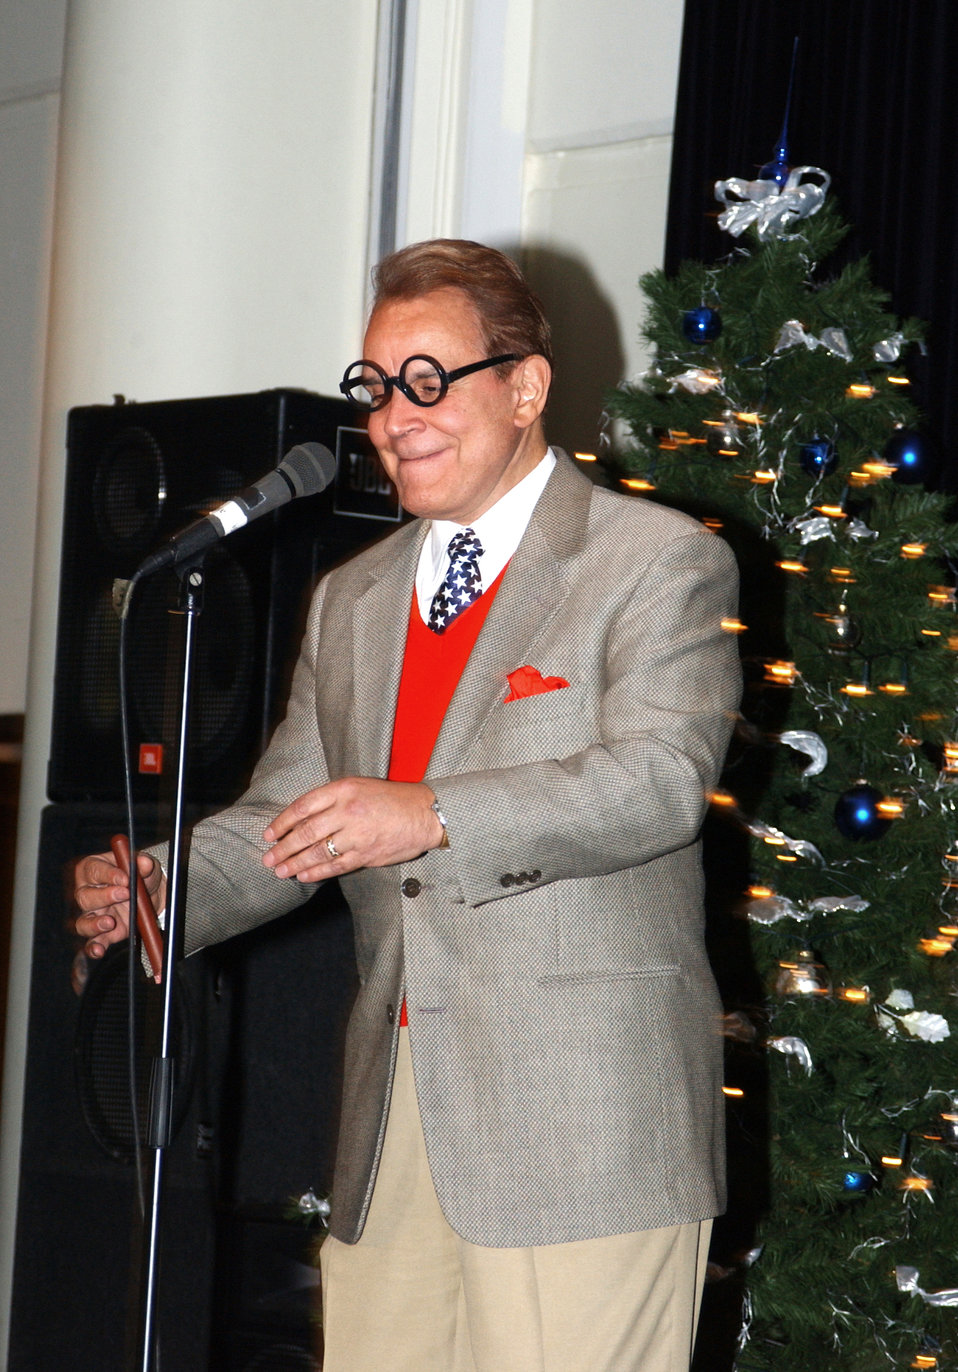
'Man of 200 voices' speaks at Incirlik

INCIRLIK AIR BASE, Turkey -- Comedian and impersonator Rich Little performs here Dec. 13 as part of the United Service Organizations and Armed Forces Entertainment 2004 Holiday Tour.